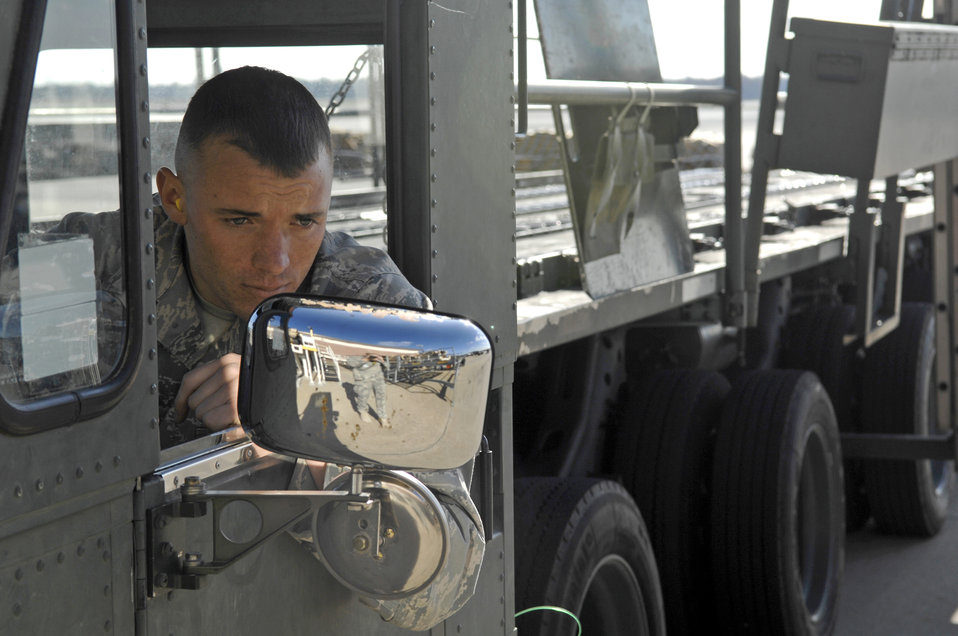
Charleston officials support Operation Enduring Freedom build up

Airman 1st Class Michael Speaks backs up a Tunner 60K loader after off-loading two mine-resistant, ambush-protected all-terrain vehicles March 23, 2010, at Joint Base Charleston, S.C. Airman Speaks is an air transportation technician with the 437th Aerial Port Squadron.